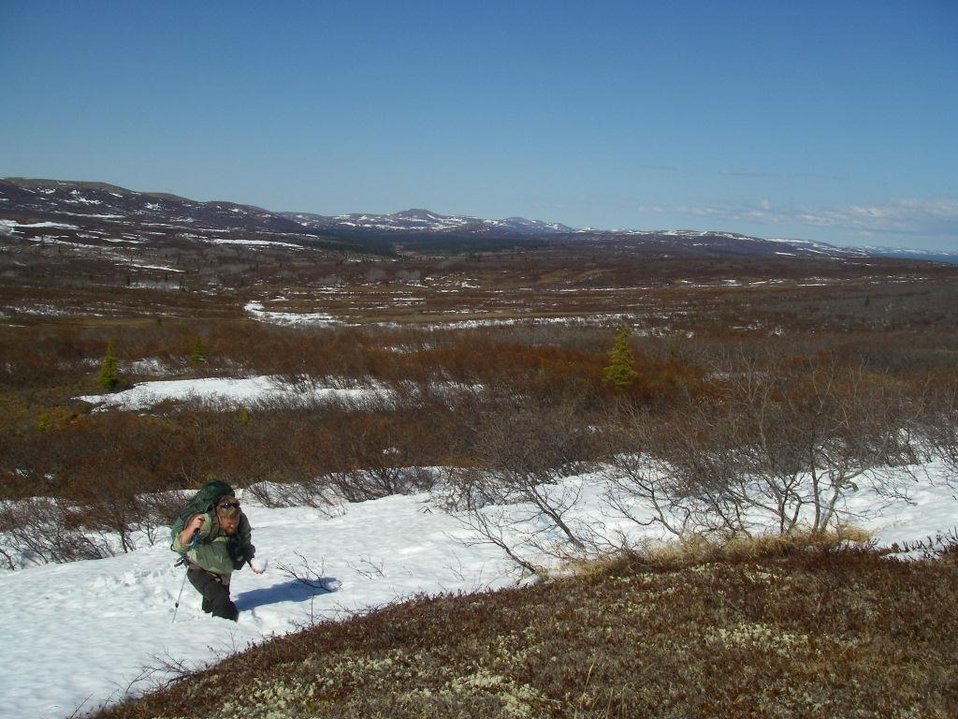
Crossing snow

Andreafsky Wilderness, Yukon Delta National Wildlife Refuge